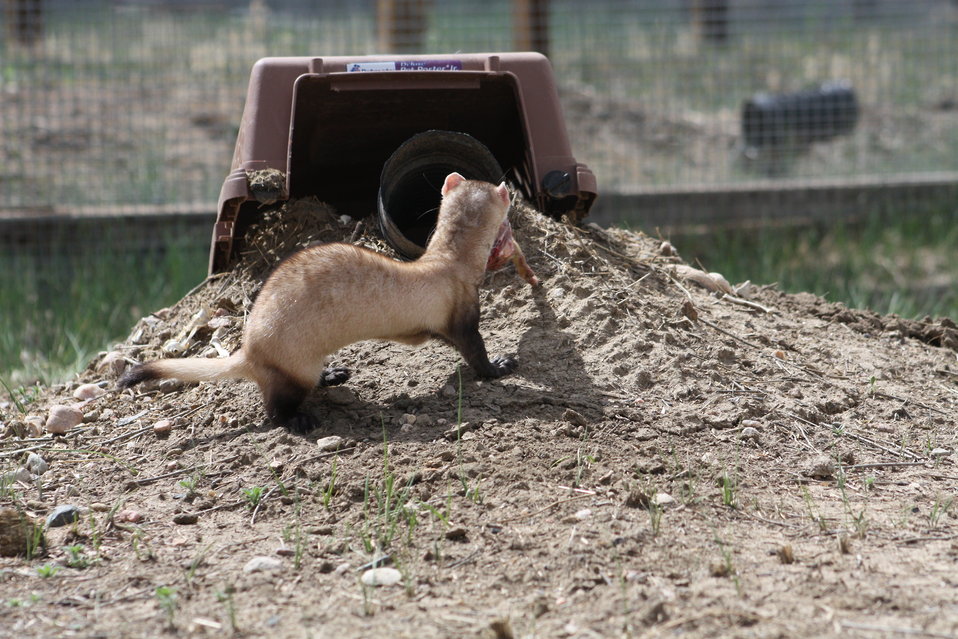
Interns visit the NBFFCC

In the summer of 2012, USFWS Region 6 interns visited the National Black-footed Ferret Conservation Center (NBFFCC) in Colorado to learn how the program reintroduces the endangered Black-footed ferret back into its native habitat.